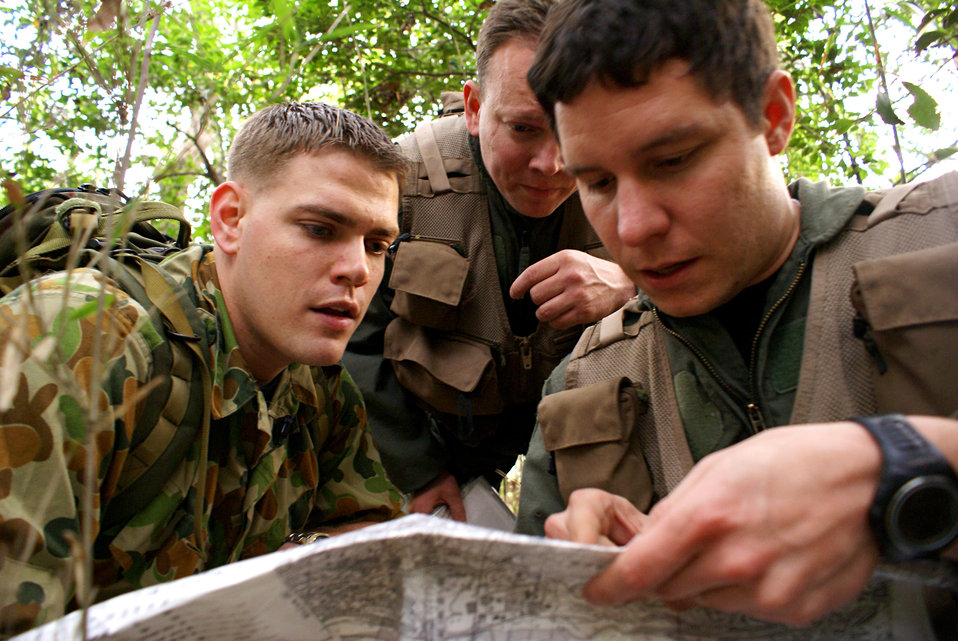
Yokota pilots get 'SERE'us capture evasion training

Capt. Pierre-Paul Alvarado (right) looks over an area map during the navigation course of training at Tama Hills, Japan, as Survival, Evasion, Resistance, and Escape specialist Senior Airman Jason Davis (left) and Capt. Gregory Davis watch the SERE student. The SERE program at Yokota is an ongoing training mission designed to keep military members at high risk of capture up to date on tactics for survival in any environment.